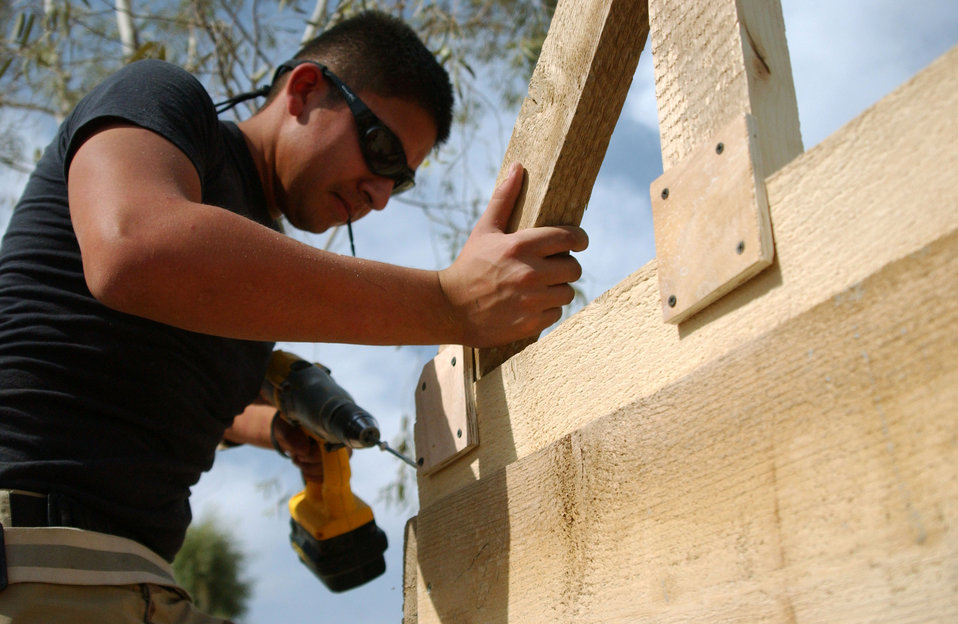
Structures team makes it happen at Balad

BALAD AIR BASE, Iraq -- Staff Sgt. Rafael Enriquez, 332nd Expeditionary Civil Engineer Squadron structures journeyman, drills screws into a shelter for the generators here Oct. 10. Sergeant Enriquez is deployed from Nellis Air Force Base, Nev.